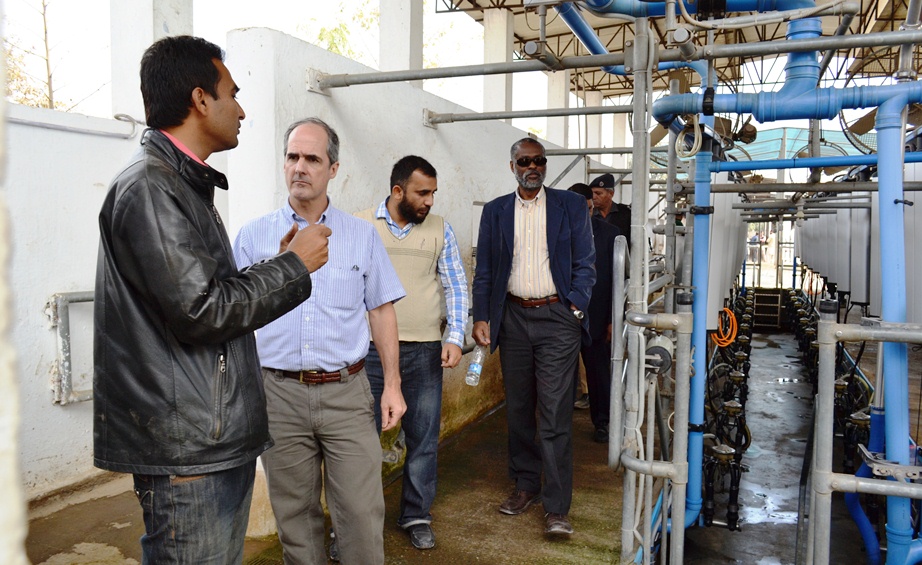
USAID Punjab team taking a tour of the Nestle Sarsabz demonstration dairy farm in Okara, where USAID-DRDF Dairy Project's farmer trainings are held.